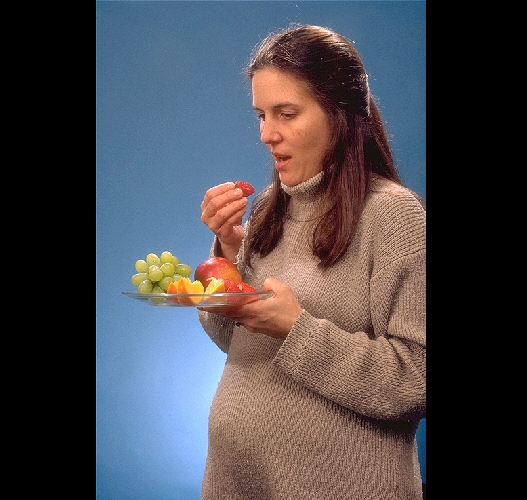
Nutrition in pregnancy.